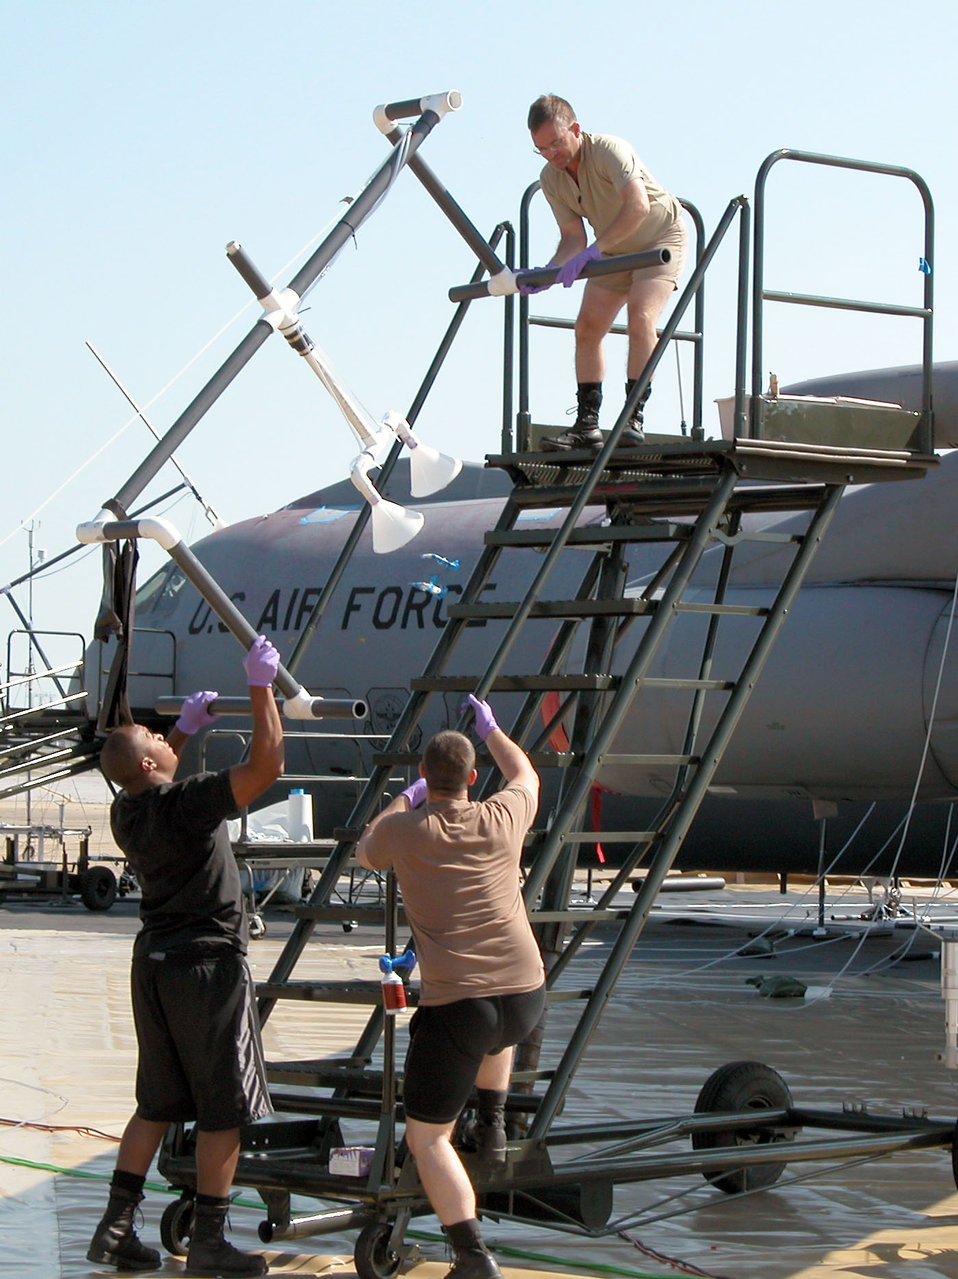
C-141 Starlifter

EGLIN AIR FORCE BASE, Fla. -- Members of the Large Airframe Decontamination Demonstration remove vapor-collection units from the wing of a C-141 Starlifter here. The units use suction to determine the level of contamination of the aircraft after a simulated chemical attack using a non-toxic